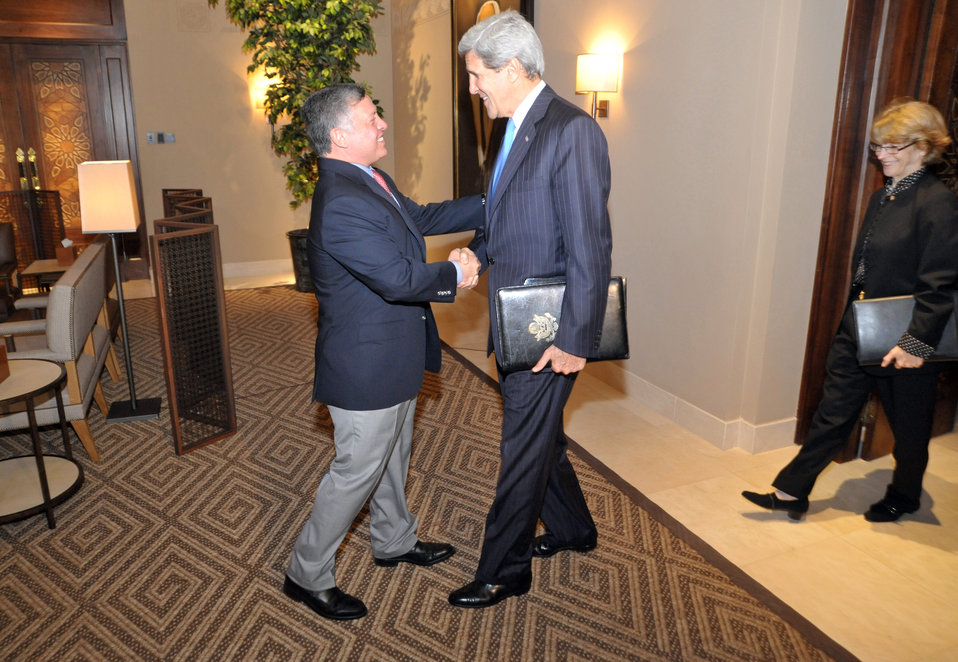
Secretary Kerry Is Greeted By King Abdullah II

U.S. Secretary of State John Kerry is greeted by King Abdullah II upon his arrival at Al-Hummar Palace in Amman, Jordan, on June 27, 2013.